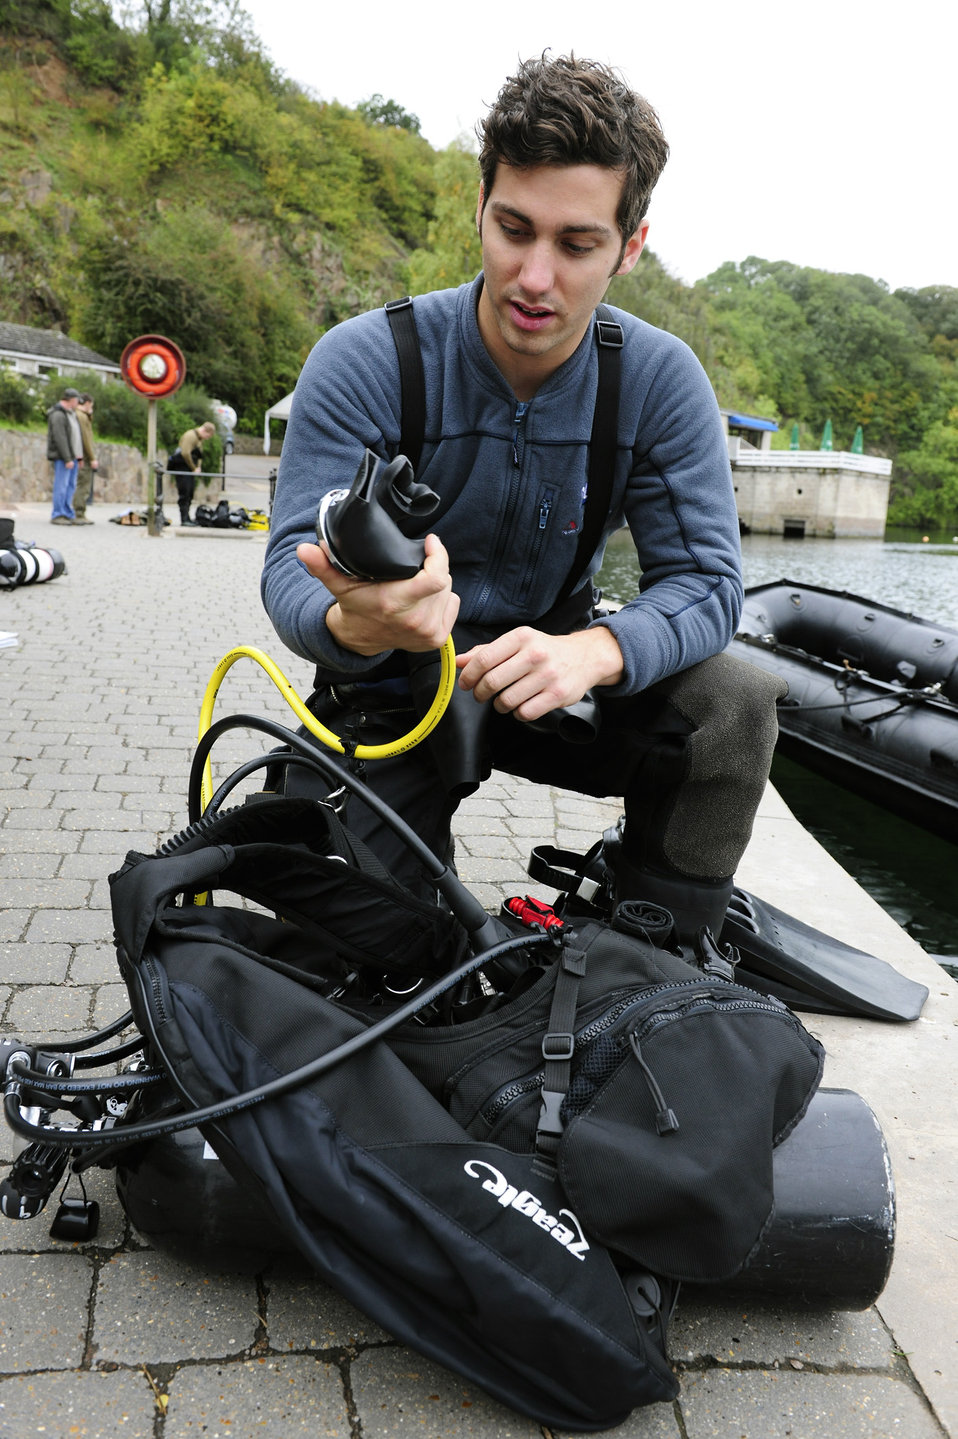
Pararescuemen train to save lives

Senior Airman Eli Reynolds checks his equipment during subsurface search, rescue and recovery training Oct. 5, 2010, at Stoney Cove, England. The combined equipment of all the divers weighed between 1,500 and 1,800 lbs. Airman Reynolds is a 56th Rescue Squadron pararescueman.